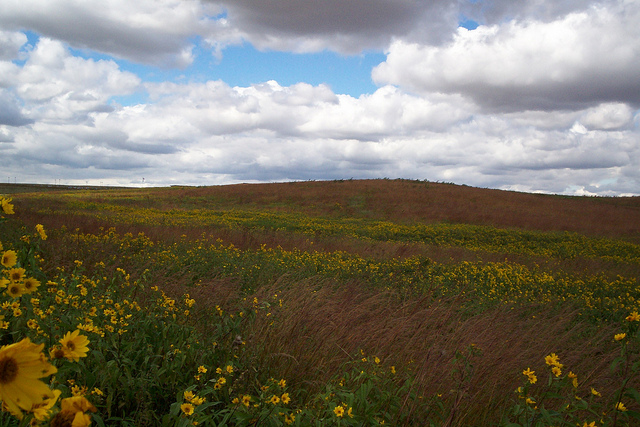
Neal Smith National Wildlife Refuge, IA

Blossoming prairie